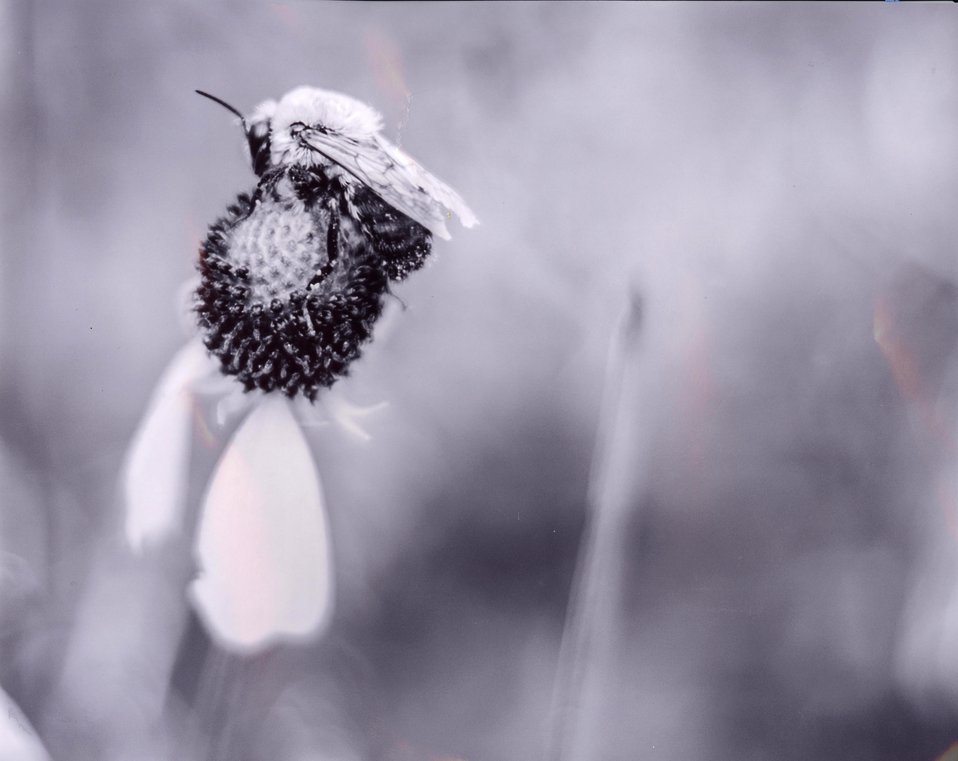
Pollinating the Shiawassee

Photo by Thai-Hoa Le/USFWS.

Shiawassee National Wildlife Refuge 2013 Photo Contest